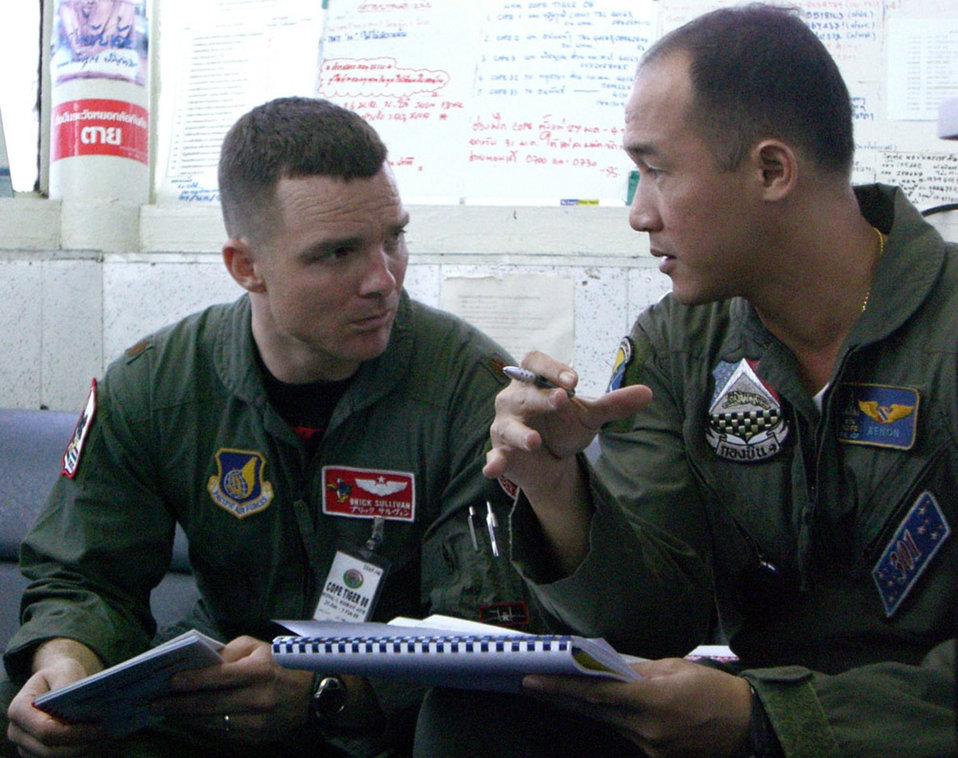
Cope Tiger takes flight

Maj. Sean Sullivan discusses air traffic procedures with Royal Thai air force Maj. Tapanon Dhanamon Jan. 27 at Korat Royal Air Base, Thailand. Cope Tiger 2008 is a multilateral joint and combined field training and humanitarian and civic assistance exercise involving Thailand, Singapore and the United States. The Thai-, Singaporean- and U.S.-hosted exercise enhances combined readiness and interoperability, reinforces U.S. commitment to the Southeast Asian region, and demonstrates the U.S. capability to project combined and joint forces strategically in a multilateral environment. Major Sullivan is the mission director of flying operations for Exercise Cope Tiger 2008, and Major Dhanamon is a Royal Thai air force F-16 pilot.